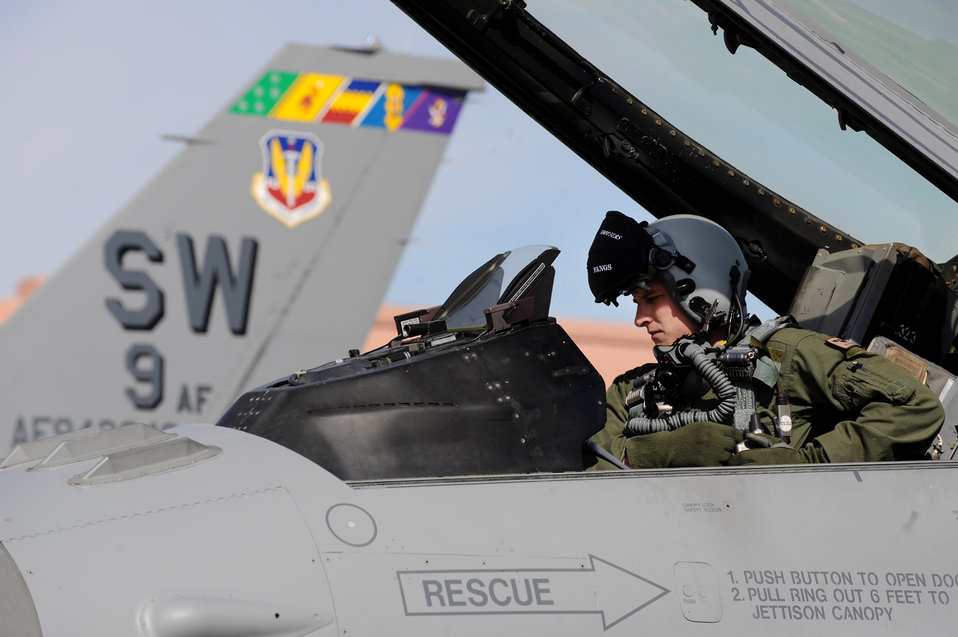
Shaw aircrews train at Red Flag

First Lt. Greg Farrell gets strapped into his F-16 Fighting Falcon before a training mission at Red Flag Feb. 23, 2010, at Nellis Air Force Base, Nev. Red Flag is a realistic combat training exercise involving the air forces of the United States and its allies. Lieutenant Farrell is a pilot from the 55th Fighter Squadron at Shaw AFB, S.C.